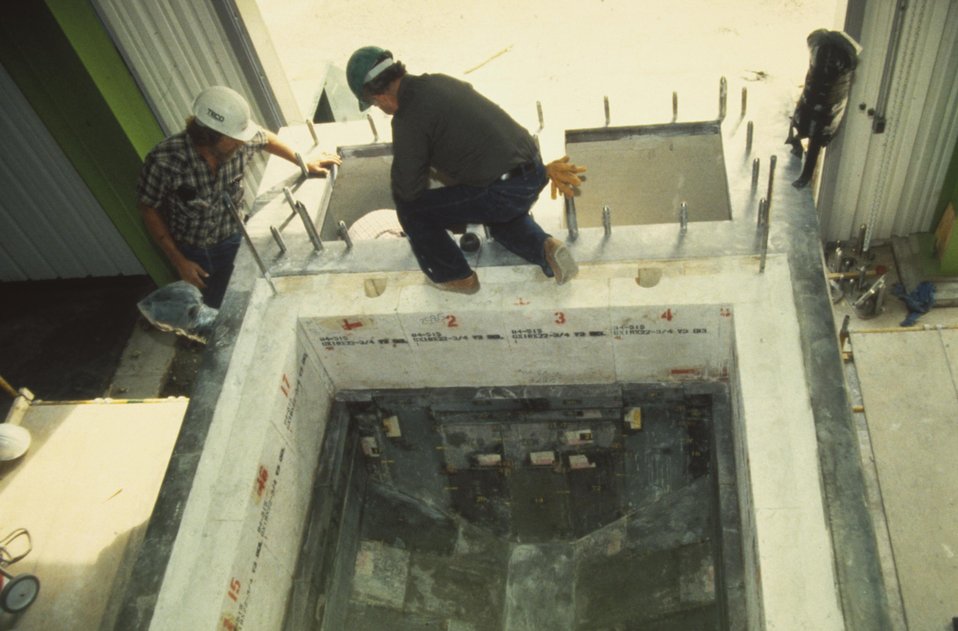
TECHNICIANS INSPECT A PORTAL IN THE CERAMIC MELTER AT THE WEST VALLEY DEMONSTRATION PROJECT.

BETWEEN 1966 AND 1972, SOME 600 METRIC TONS OF SPENT NUCLEAR FUEL WERE REPROCESSED AT THE NUCLEAR FUEL SERVICES, INC. PLANT IN WEST VALLEY, NEW YORK. THE FUEL RODS WERE CONVERTED INTO A SLUDGE WHICH WAS STORED IN UNDERGROUND TANKS ON THE SITE. AT THE TIME OF THE PLANT'S CLOSING, 600,000 GALLONS OF HIGH-LEVEL RADIOACTIVE LIQUID WASTE WERE STORED IN THE TANKS. TODAY, THE FACILITY, RENAMED THE WEST VALLEY DEMONSTRATION PROJECT, IS BEING USED TO ILLUSTRATE TECHNIQUES FOR THE SOLIDIFICATION AND PREPARATION OF HIGH-LEVEL WASTE FOR PERMANENT DISPOSAL. TECHNICIANS WILL CONVERT THE RADIOACTIVE SLUDGE INTO A SAFE GLASS SOLID (BOROSILICATE GLASS) USING A SLURRY-FED CERAMIC MELTER. SELECTED AREAS OF THE REPROCESSING FACILITY ARE BEING DECONTAMINATED AND MODIFIED FOR THE PROJECT, AND PLANNING HAS BEEN COMPLETED FOR MAJOR REFURBISHMENTS IN OTHER KEY AREAS NEEDED TO SUPPORT IT. SOLIDIFICATION OF THE HIGH-LEVEL WASTES AT WEST VALLEY IS EXPECTED TO BE COMPLETED IN 1990.